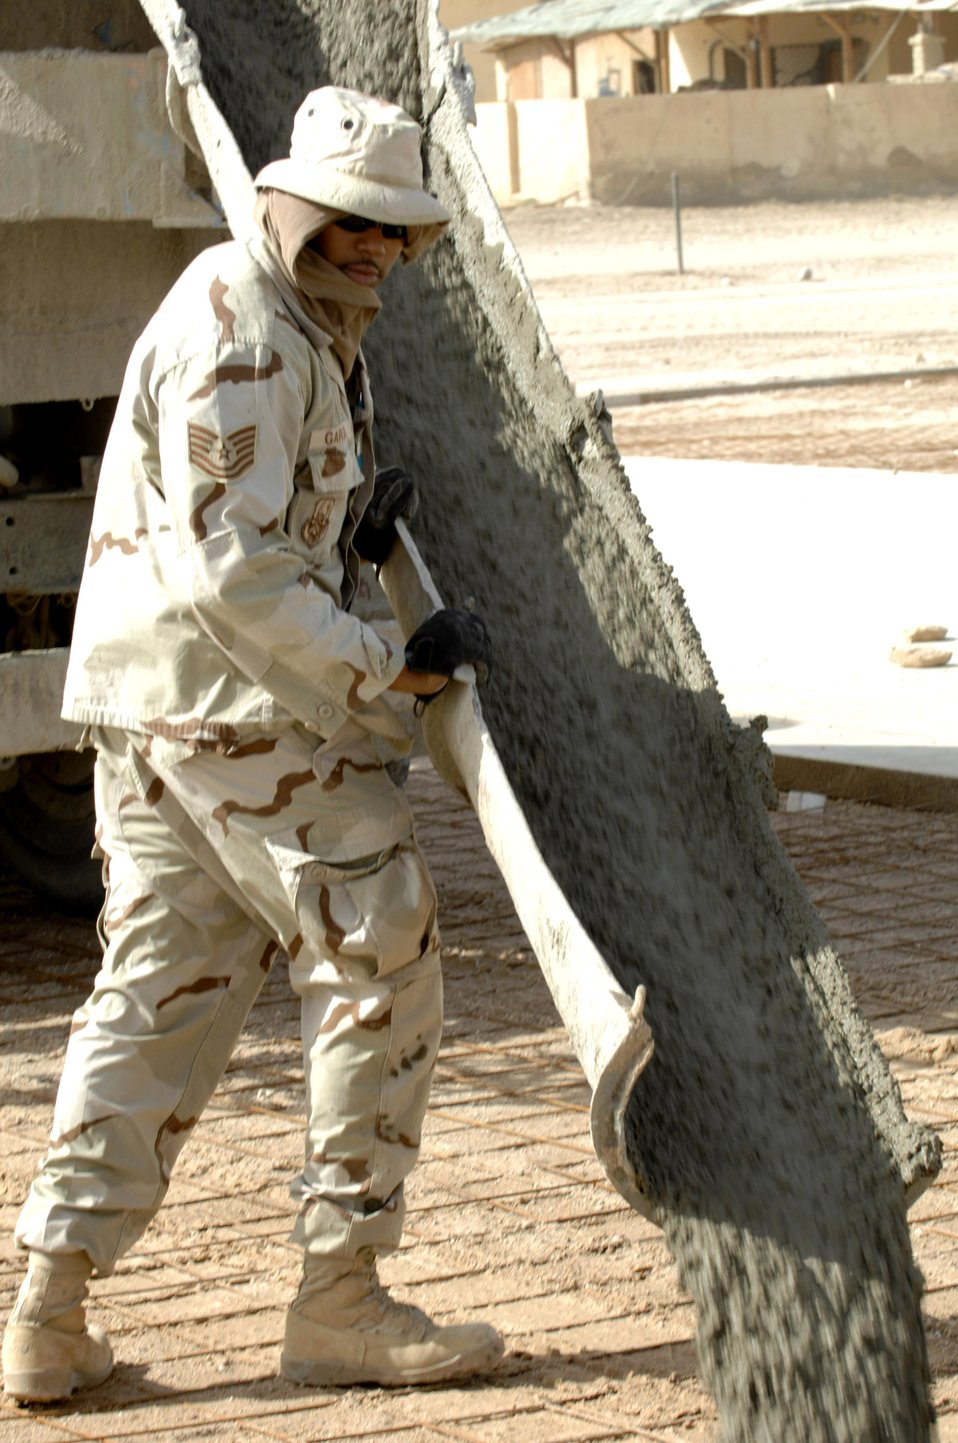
Civil engineers pave the way for Iraqi Army

Tech. Sgt. Adenauer Garcia directs the pouring of cement from a contractor truck June 11 while building a drill pad on Camp Mittica, Iraq,. Sergeant Garcia is assigned to the 407th Expeditionary Civil Engineer Squadron.